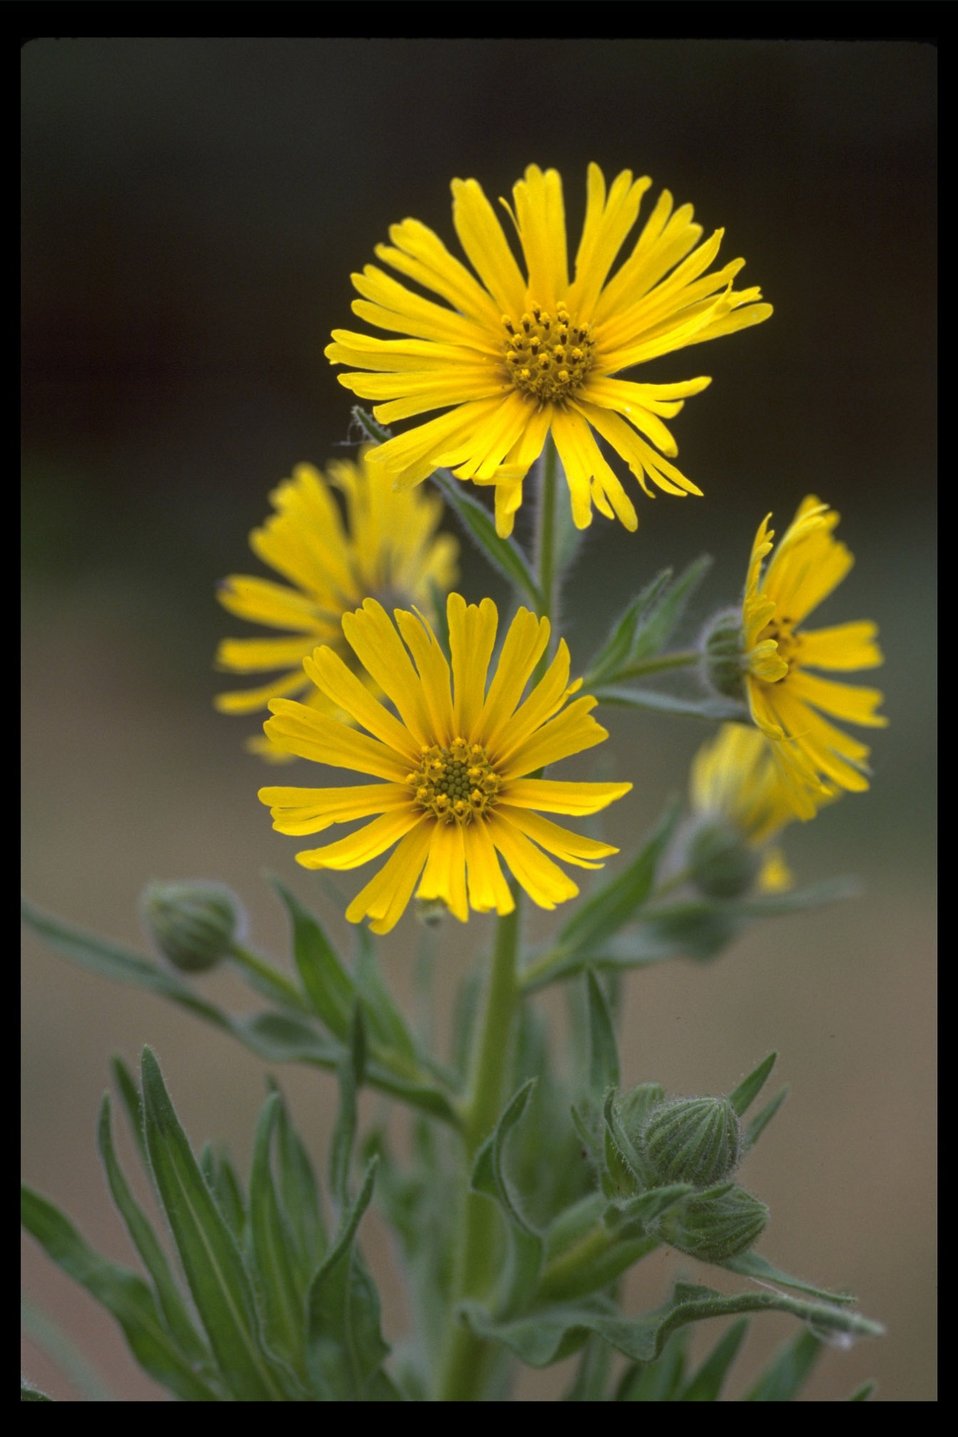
Common Tarweed (Madia sp.) near Lost Creek Lake.